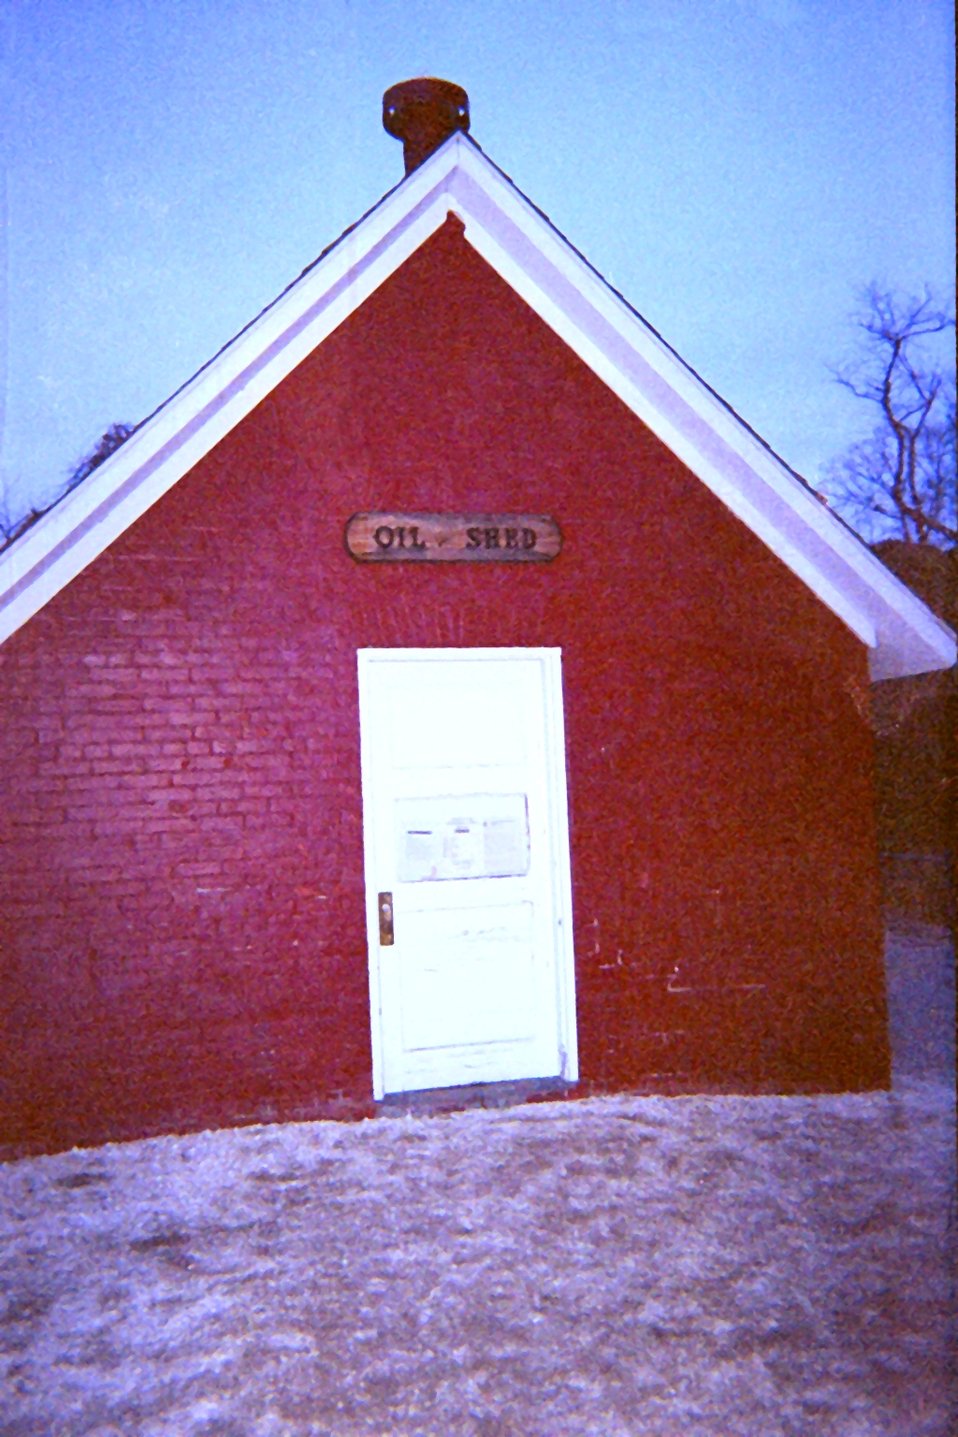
The oil shed at Assateague Light House.